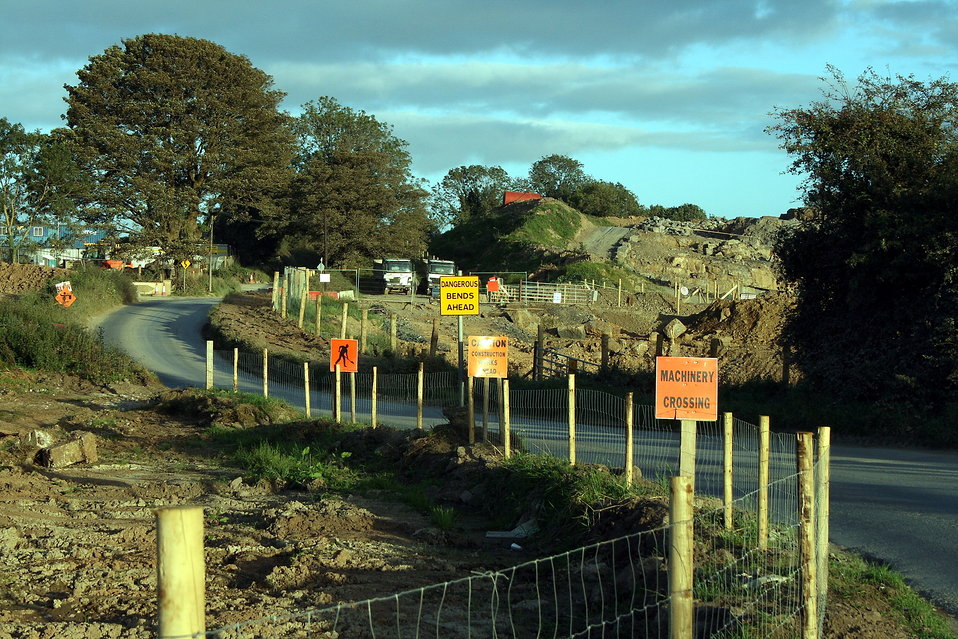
R504 in County Tipperary winding through construction works of the new M7 Limerick-Nenagh motorway. (September 2007)